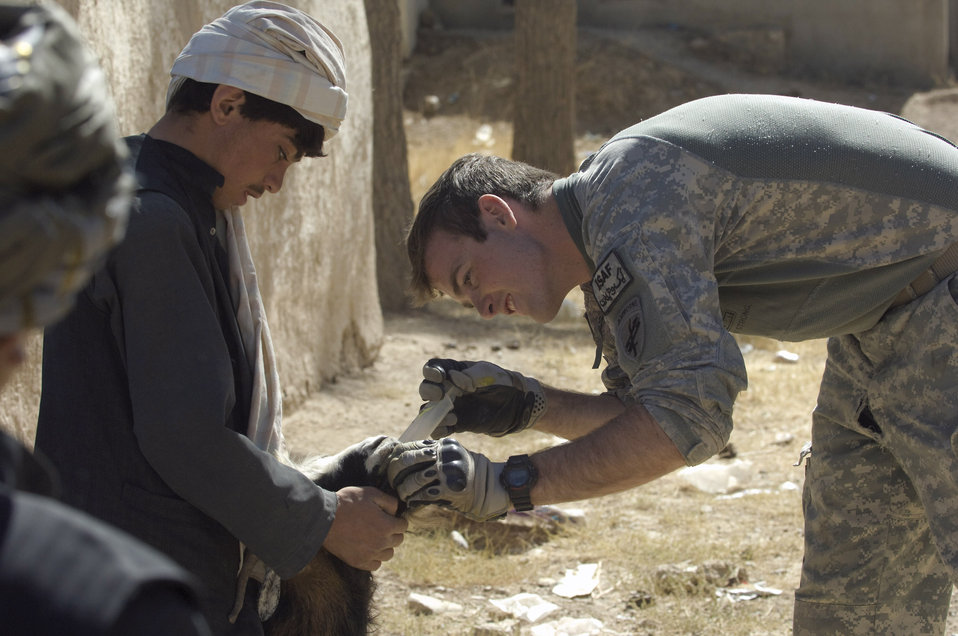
Veterinary care helps build relations with nomadic tribe

Army Spc. Don DeBardelan deworms Kuchi livestock during a veterinary medical outreach conducted by the Zabul Provincial Reconstruction Team Oct. 18 in Qalat, Afghanistan. The PRT members offered free deworming and vitamin supplements during the VMO. Specialist DeBardelan, a civil affairs specialist, coordinates with Kuchi leaders to provide their tribe humanitarian assistance.